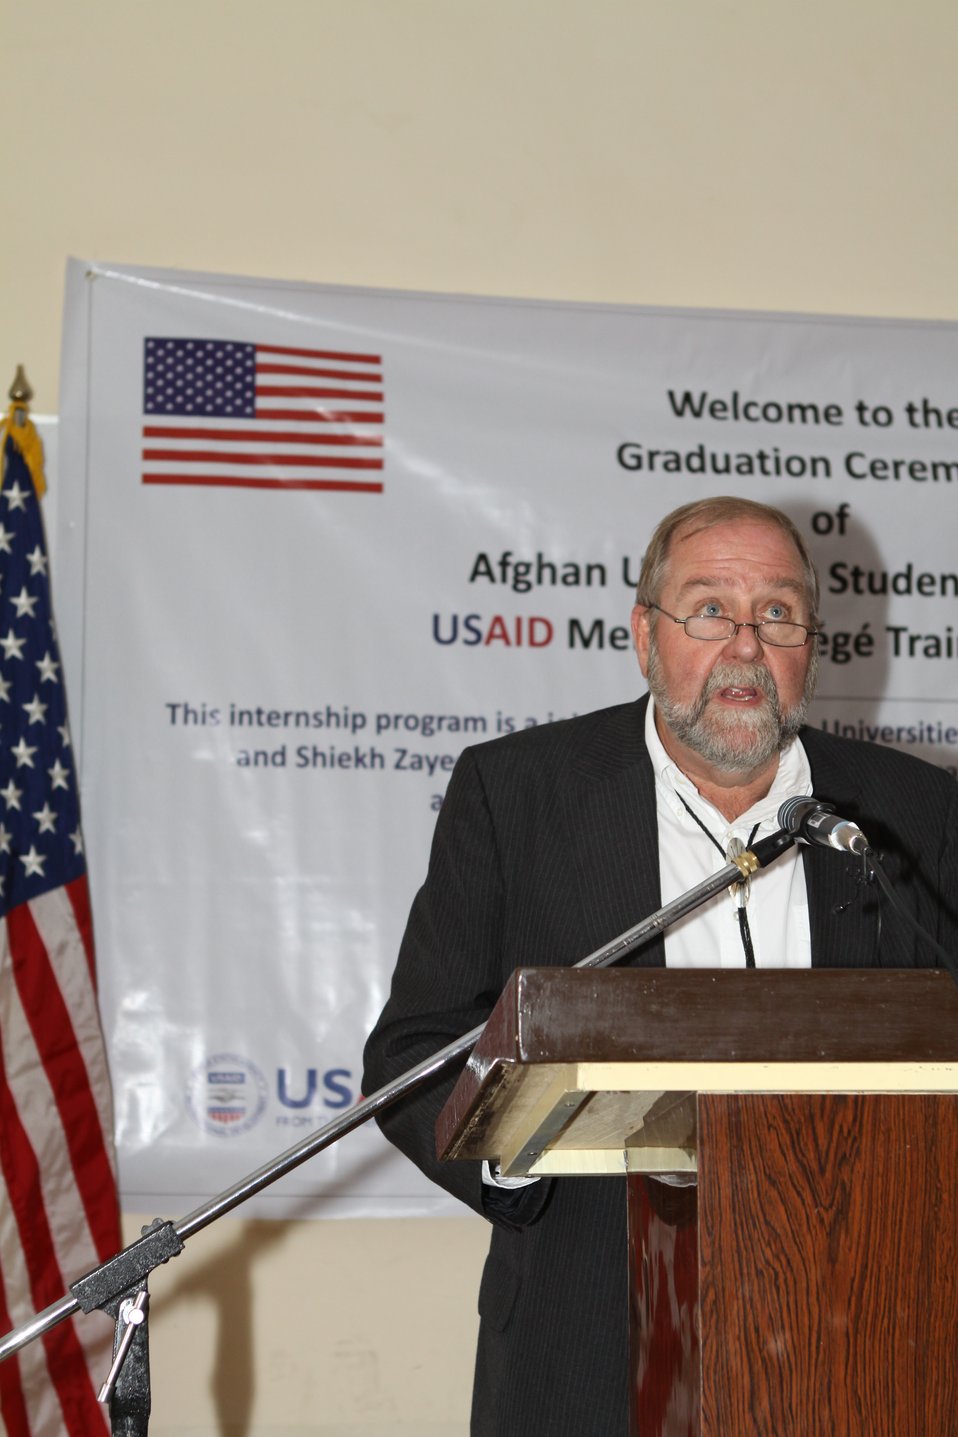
Female University Students Complete Internship

Kabul, Afghanistan | March 16, 2011 – In response to a demand for qualified Afghan engineers, Kabul University celebrated completion of an intensive five-month Mentor Protégé Training Program today by 10 female fourth year university students. The Training Program is a joint effort between the Government of the Islamic Republic of Afghanistan, the U.S. Agency for International Development (USAID), and the Universities of Kabul, Kandahar, Alberoony in Kapisa, Shiekh Zayed in Khost. The graduation ceremony highlighted collaboration with these national institutions in building the technical skills of young Afghans, made possible by USAID.

Four of the interns are engineers, while the remaining six are from the faculties of computer science, economics, and psychology.

Speaking about the event, H.E. Minister of Public Works Abdul Qudus Hamidi said, “The future of Afghanistan lies in developing the skills of our youth, and the engineering skills of these graduates today represent a small but important step forward for the country.”

Keynote speakers at the ceremony included H.E. Deputy Minister of Higher Education Abdul Rahim; USAID Senior Deputy Mission Director Robert Hellyer; and Chancellor of Kabul University Professor Hamidullah Amin. Approximately 150 people, including current and former students attended the graduation.

Launched last year, the Mentor Protégé Training Program has provided qualifying students the opportunity to intern with USAID’s Strategic Provincial Roads-South and East Afghanistan project and gain practical experience in a real work environment. The goal of the program was to offer interns the opportunity to gain hands-on experience to reinforce their formal studies. A total of 30 students from four national universities have benefitted from this program.

“The promotion of women’s rights is integrated into the overall U.S. Government development strategy and can be found in key programs, including education, healthcare, security, rule of law, political participation, agriculture, and economic development,” said Robert Hellyer. “The U.S. Government is committed to the Afghan leadership of programs that directly enhance development, particularly as it relates to women’s issues.”

This event also highlighted the learning achievements of students and emphasized the importance of hands-on internship programs. The curriculum is designed to instill students with the knowledge and confidence to qualify for engineering positions upon completion of their fourth year at their respective universities.